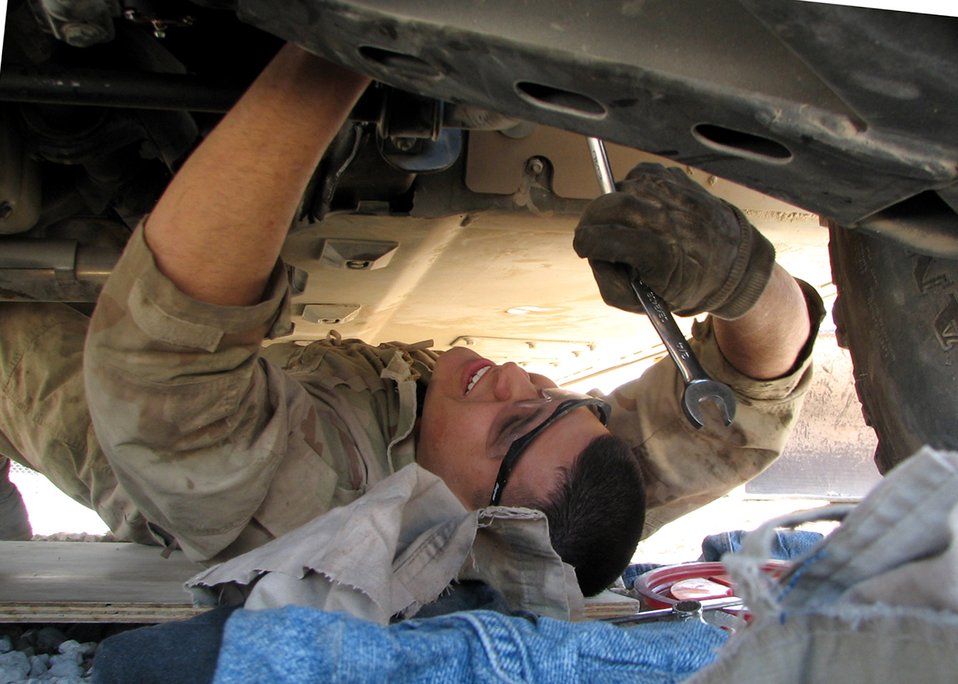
Keeping it moving in Kandahar

Senior Airman Daniel replaces a gear box on an up-armored Humvee Oct. 12 at Kandahar Airfield, Afghanistan. Airman Garcia is a member of the 455th Air Expeditionary Wing, whose mission is to provide close-air support, mobility, intelligence, surveillance and reconnaissance in support of the war on terrorism. Airman Garcia is from Tucson, Ariz.